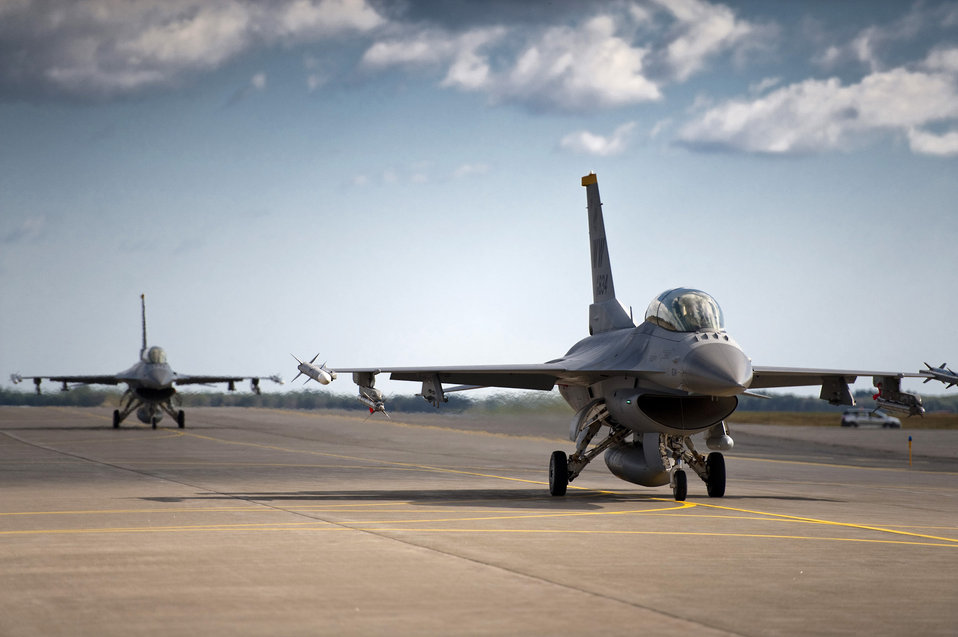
Flight of a lifetime

With Capt. Chris Nations at the helm, Staff Sgt. Bernard Mutz begins his F-16 Fighting Falcon incentive flight Oct. 22, 2010, at Misawa Air Base, Japan. Captain Nations is the 14th Fighter Squadron standardization and evaluation officer and Sergeant Mutz is the readiness and emergency manager for the 35th Civil Engineer Squadron.